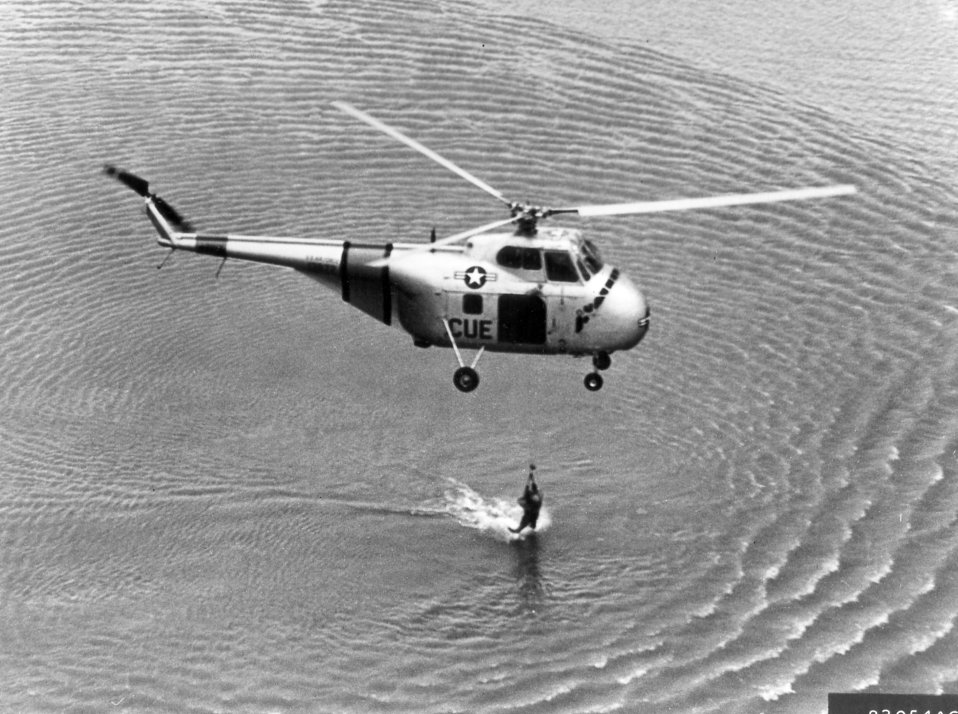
G & A (Firestone) H-19 helicopter

1950's -- A U.S.A.F. H-19 helicopter, 3rd Air Rescue Group, is seen hoisting an unidentified airman aboard from Far East waters. 1953